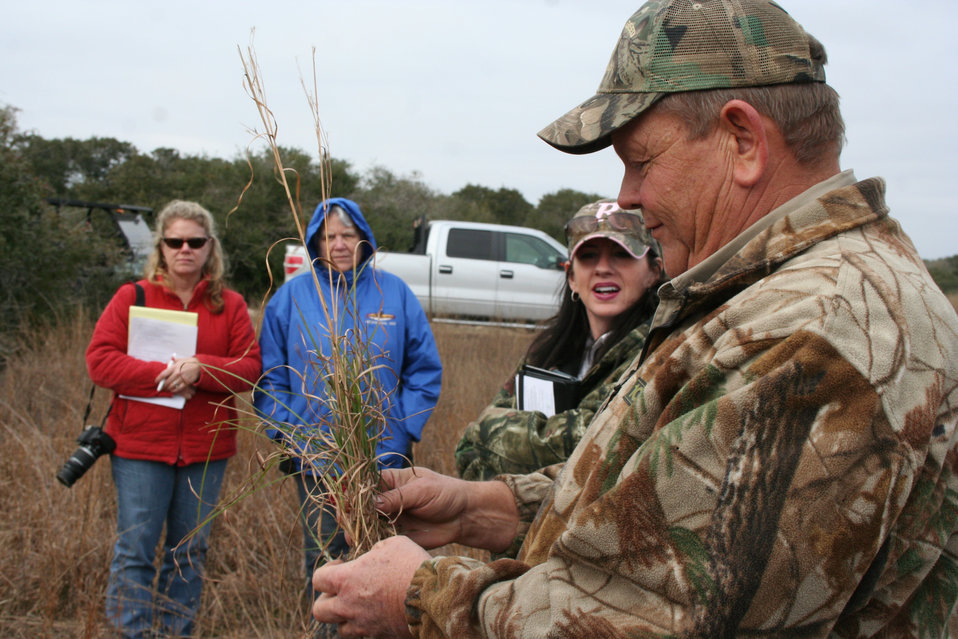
U.S. Department of Agriculture (USDA) Natural Resource Conservation Service (NRCS) wildlife biologist Garry Stephens discusses plant identification and habitat evaluation at Women of the Land.